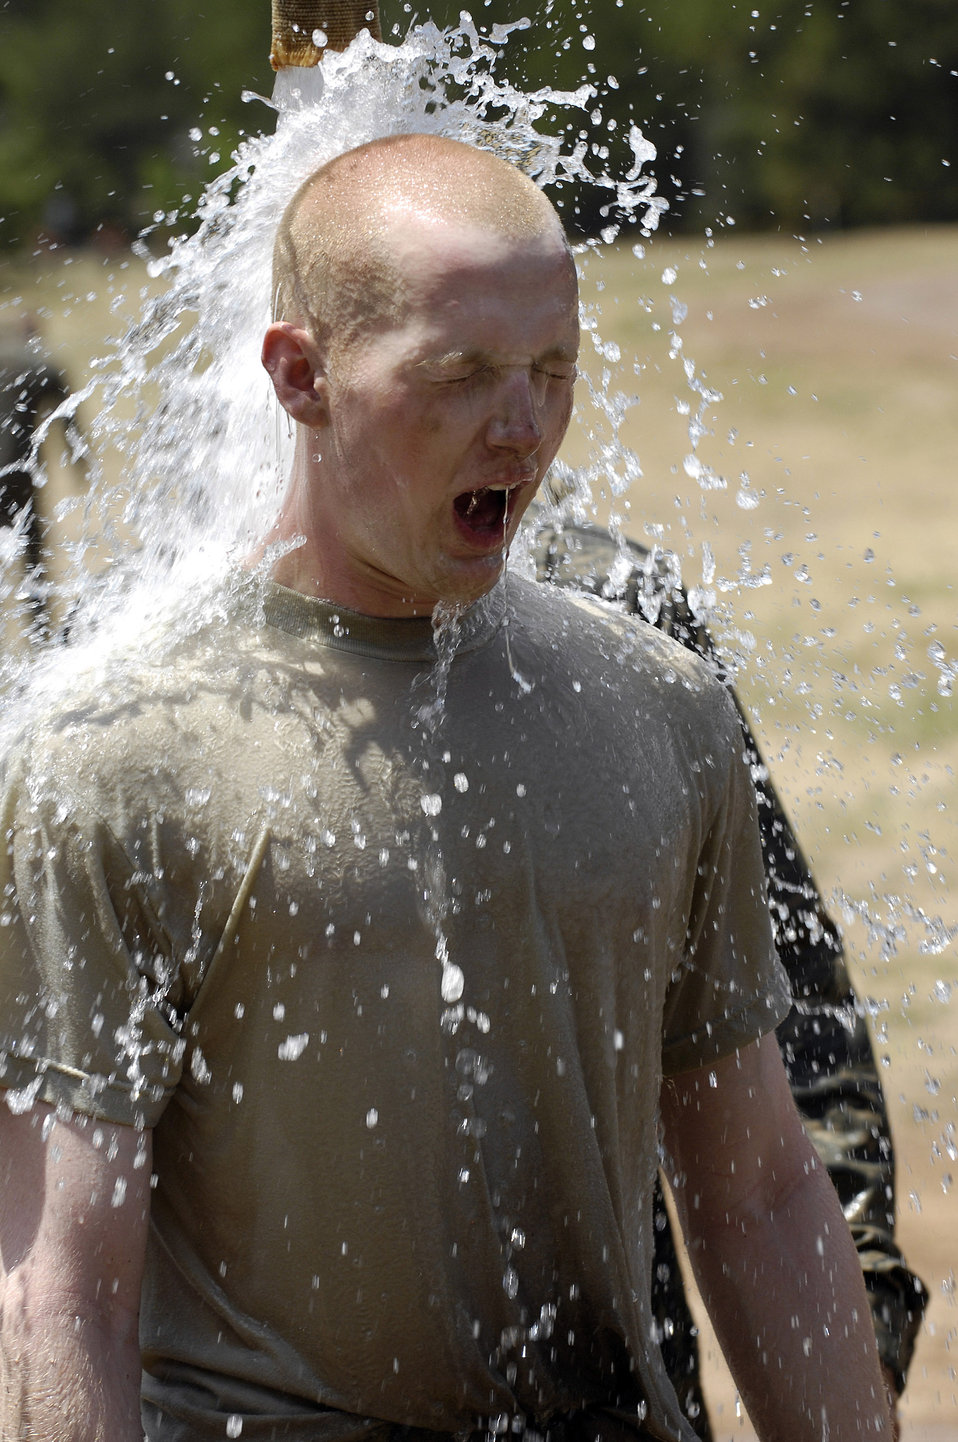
Time to cool off

U.S. Air Force Academy basic cadet Ryan Taylor rinses off after running the assault course during the field training portion of basic training July 16th.